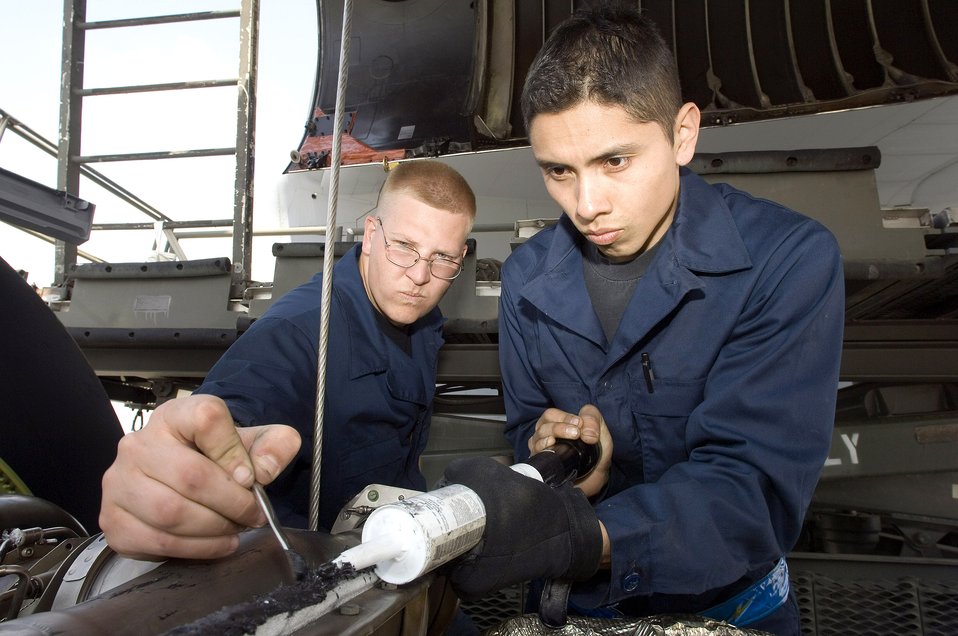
Maintainers keep C-5s flying

Senior Airmen Bryan McGee (left) and Jose Juarez put sealant in an engine as they prepare it for mounting on a C-5 Galaxy on May 12, 2006, at Ramstein Air Base Germany. The Airmen are jet engine mechanics assigned to the 723rd Air Mobility Squadron.